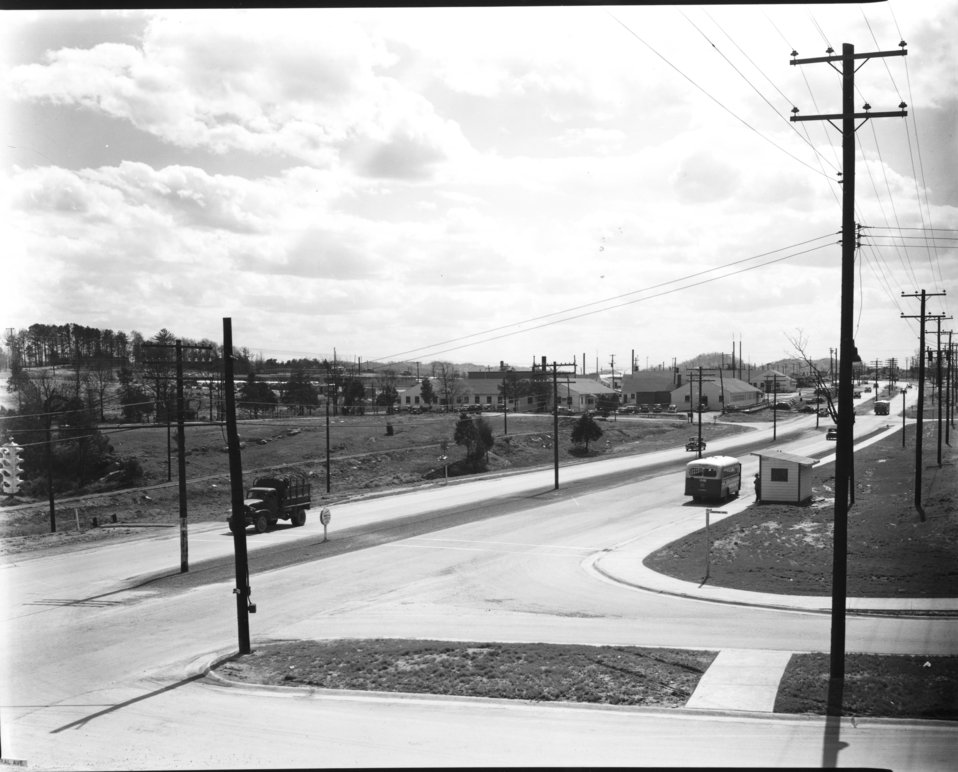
Recreation at Oak Ridge